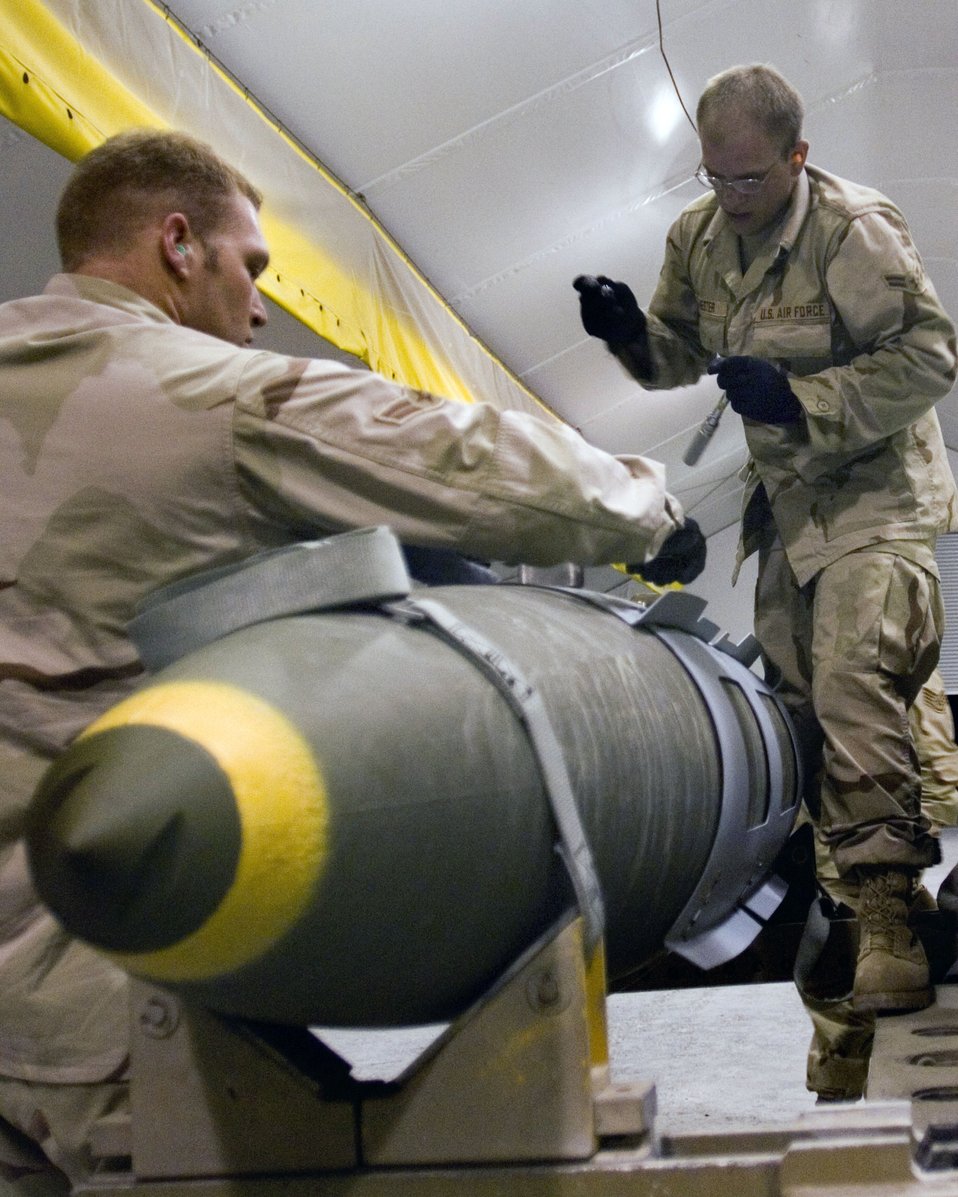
379th fights GWOT 24/7

Airmen 1st Class Cory Shinn and Andrew Hester build a GBU-31 bomb to replenish expended munitions. Both are assigned to the 379th Expeditionary Maintenance Squadron munitions flight.